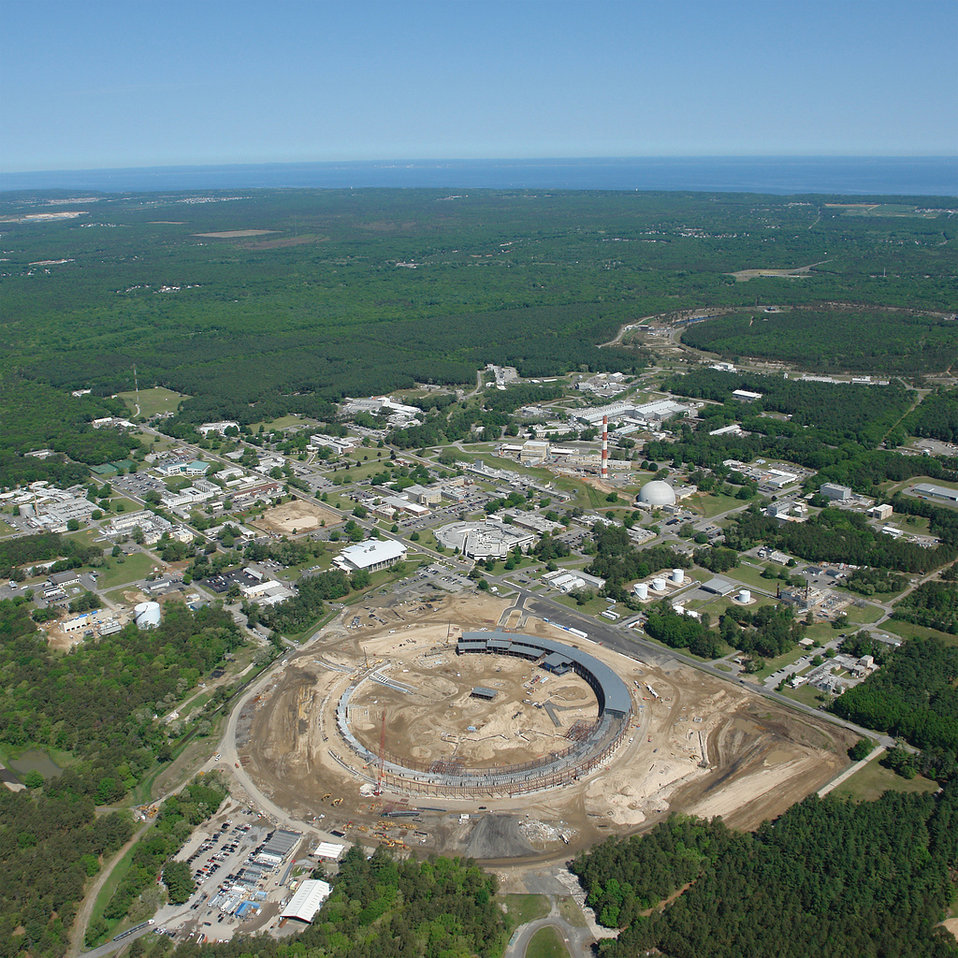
Brookhaven